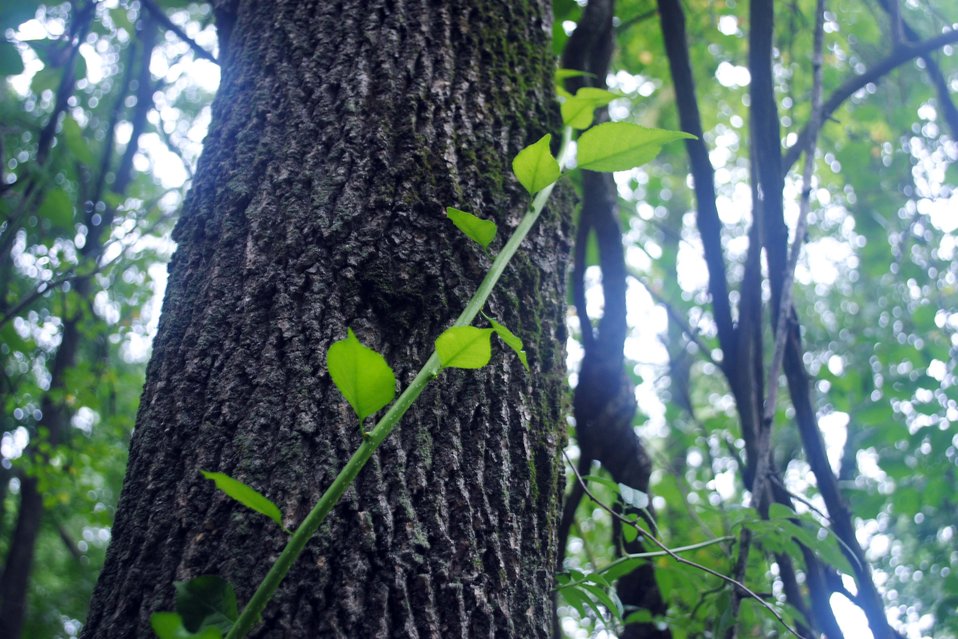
Vine winding around a tree at the Fort River Division of the Silvio O. Conte National Wildlife Refuge, Hadley, MA.